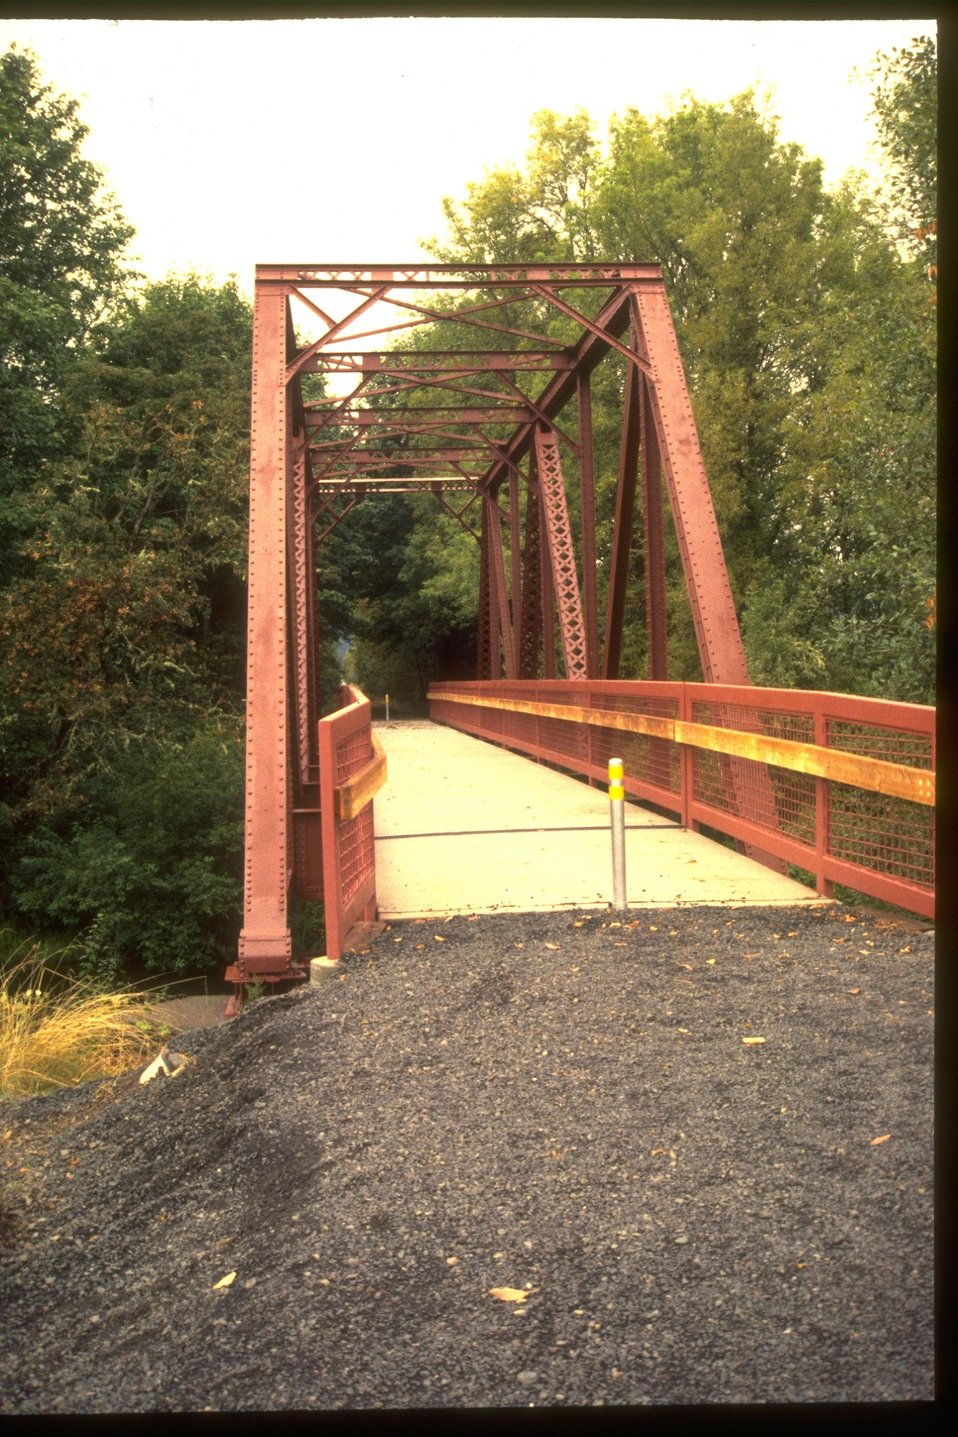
Bridge on Row River Trail.